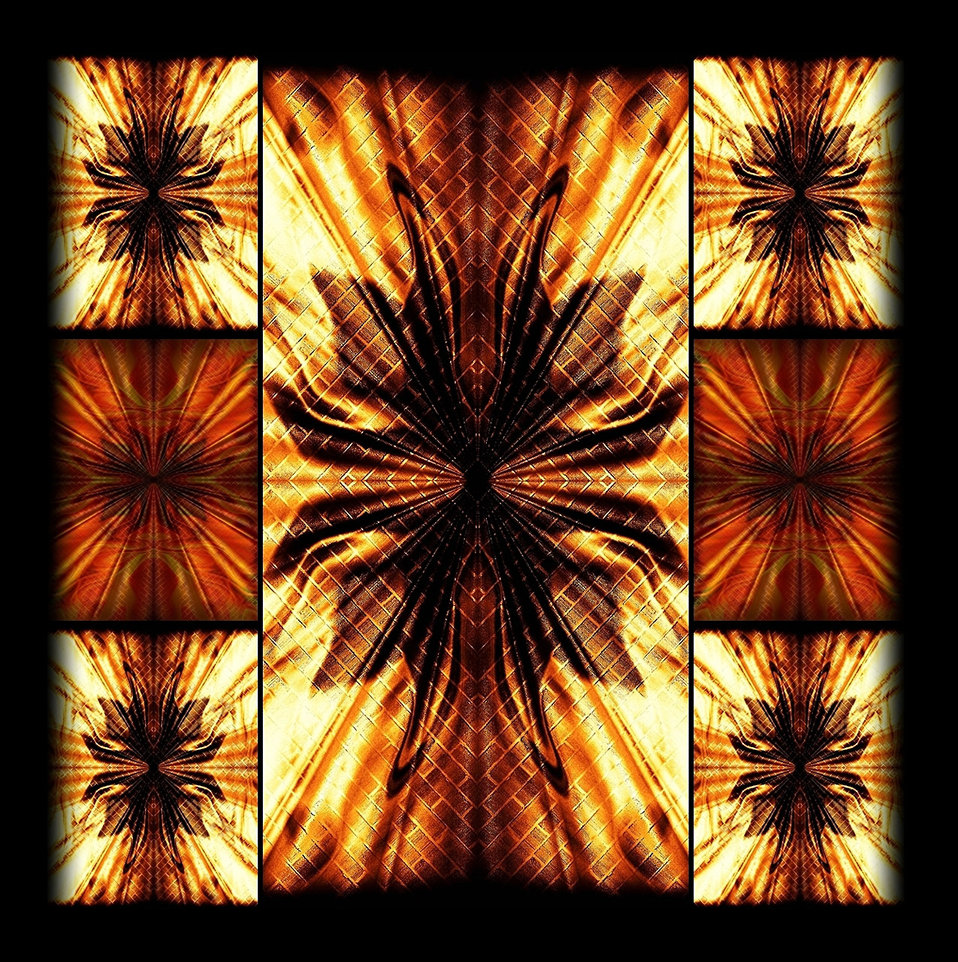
Background patterns.